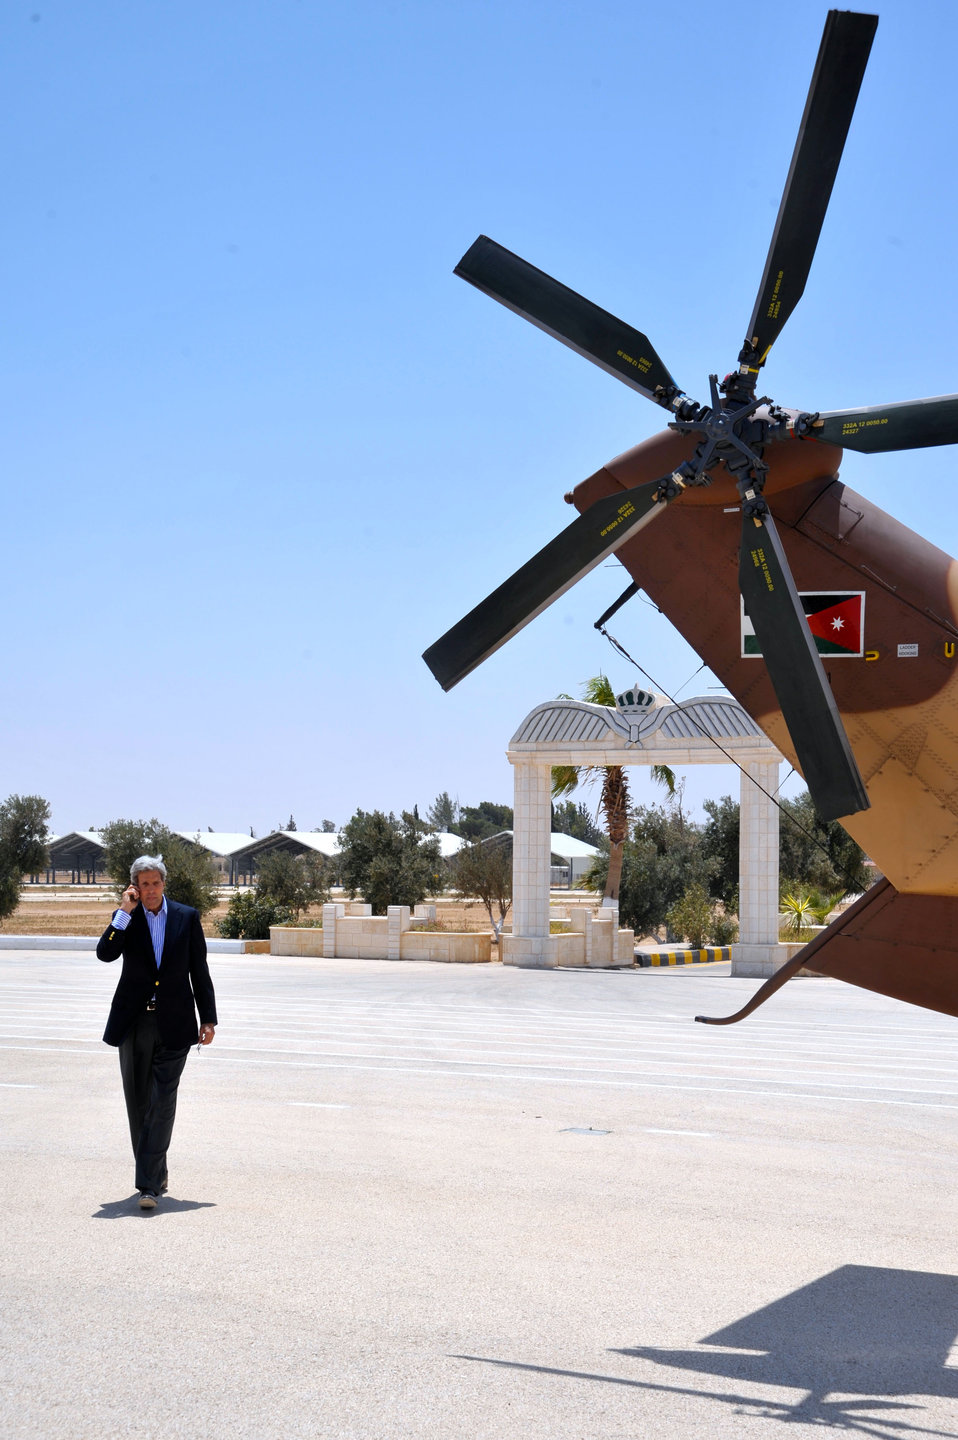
Secretary Kerry Makes a Phone Call

U.S. Secretary of State John Kerry makes a phone call before taking off from Marfar Airbase between flights to two Syrian refugee camps in Jordan on July 18, 2013.